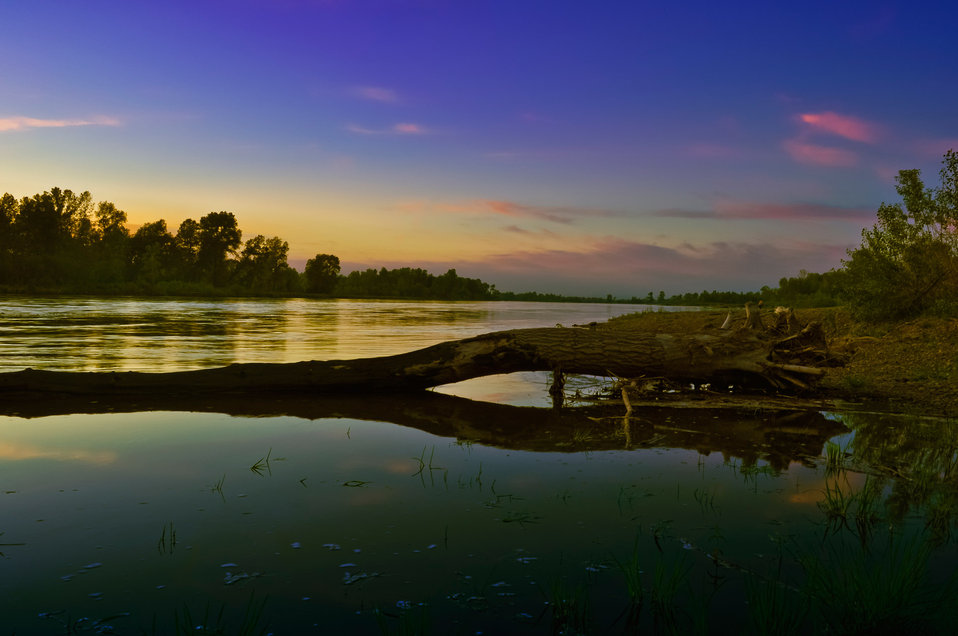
A gentle sunset

The orange sun sets over the river.